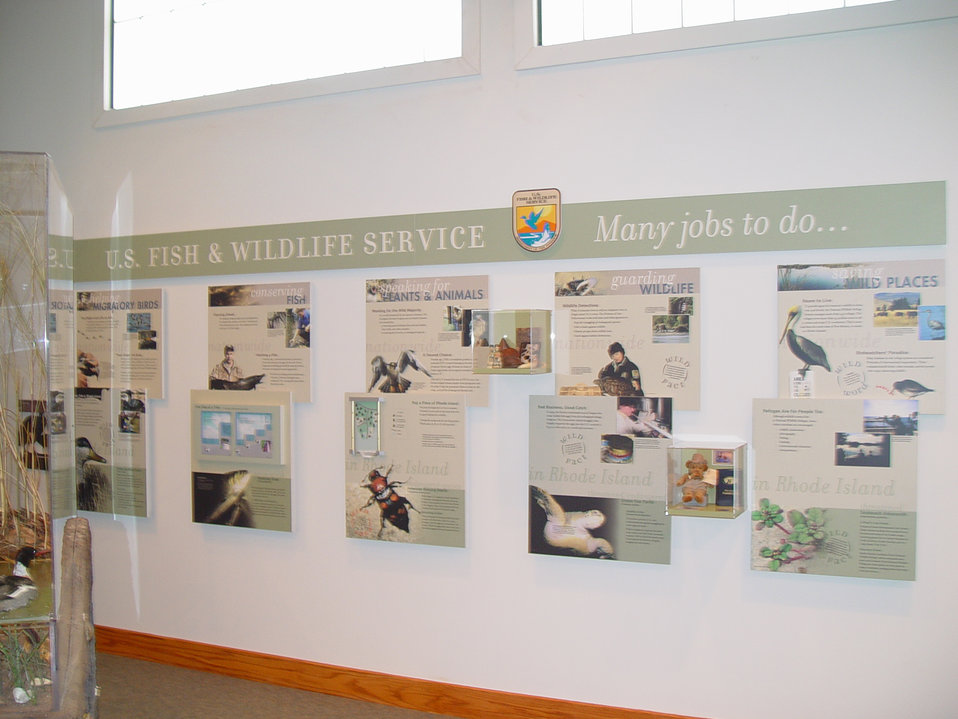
Kettle Pond Visitor Center in Charlestown, RI.